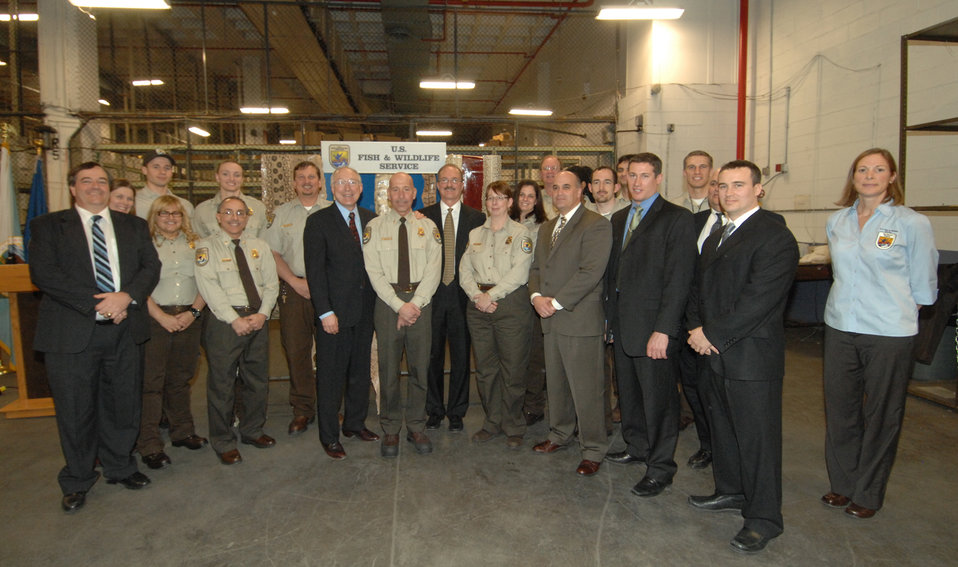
Secretary Salazar and Fish and Wildlife Service Employees

On January 20, Secretary of the Interior Ken Salazar visited the Port of New York to announce that the U.S. Fish and Wildlife Service will propose to list the Burmese python and eight other large constrictor snakes that threaten the Everglades and other sensitive ecosystems as “injurious wildlife” under the Lacey Act.